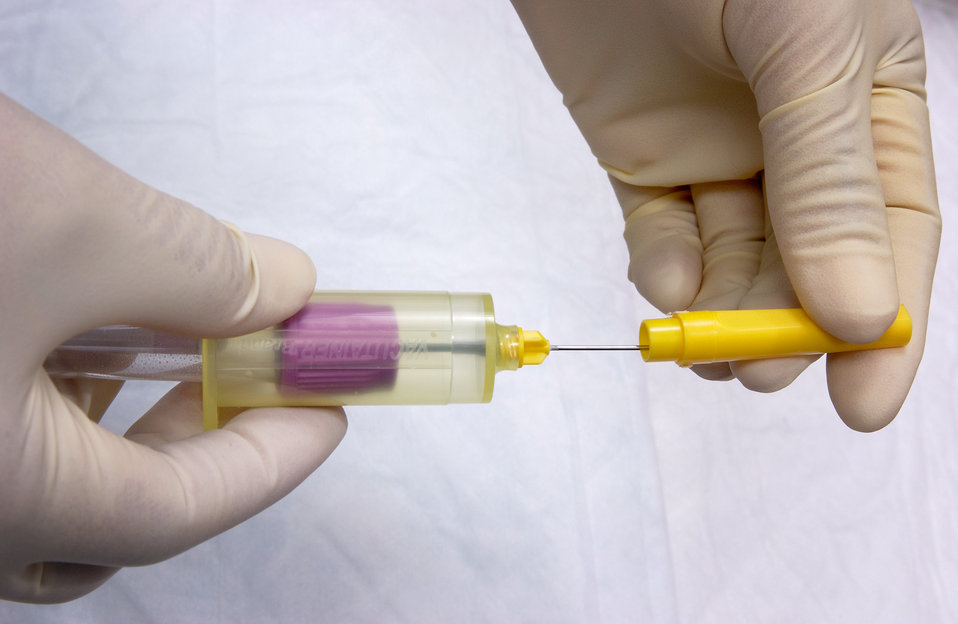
This image depicts a trained phlebotomist, i.e., a technician skilled in the practice of drawing blood from a patient, removing the protective plastic tip that covers the needle just prior to performing a venipuncture into a patient's antecubital arm vein.